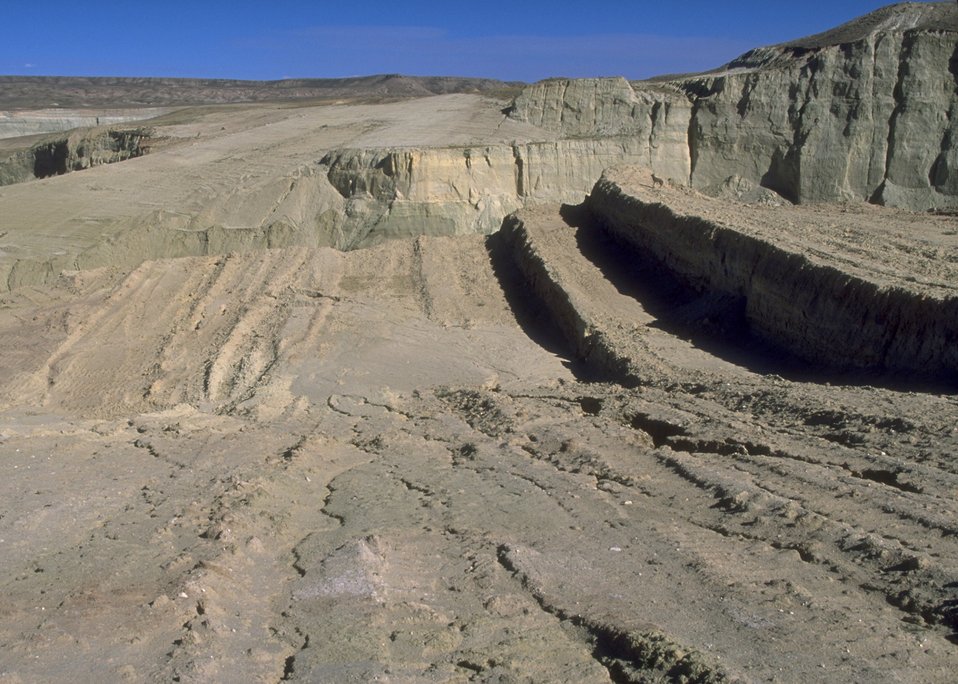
Gas Hill Abandoned Mine Lands in various stages of rehabilitation, Lander Field Office.